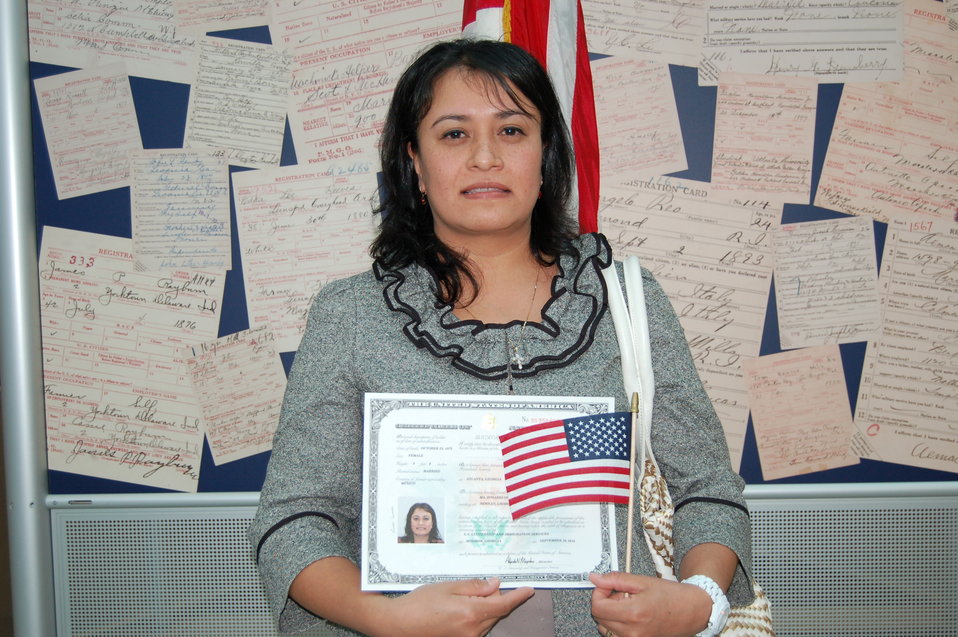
New Citizens